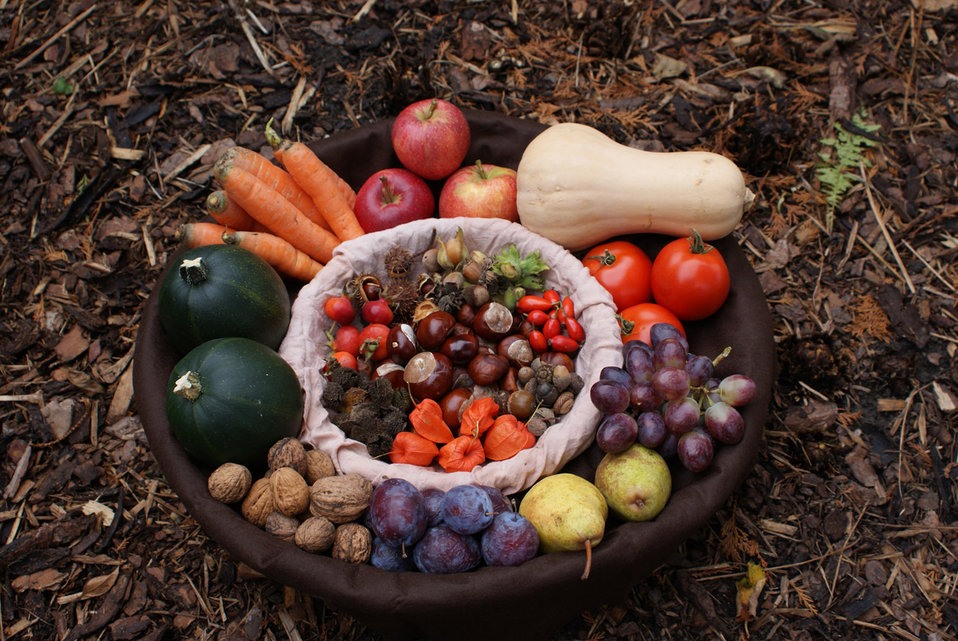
Thanksgiving 1

Basket at thanksgiving, filled with fruits and autumn natural materials.